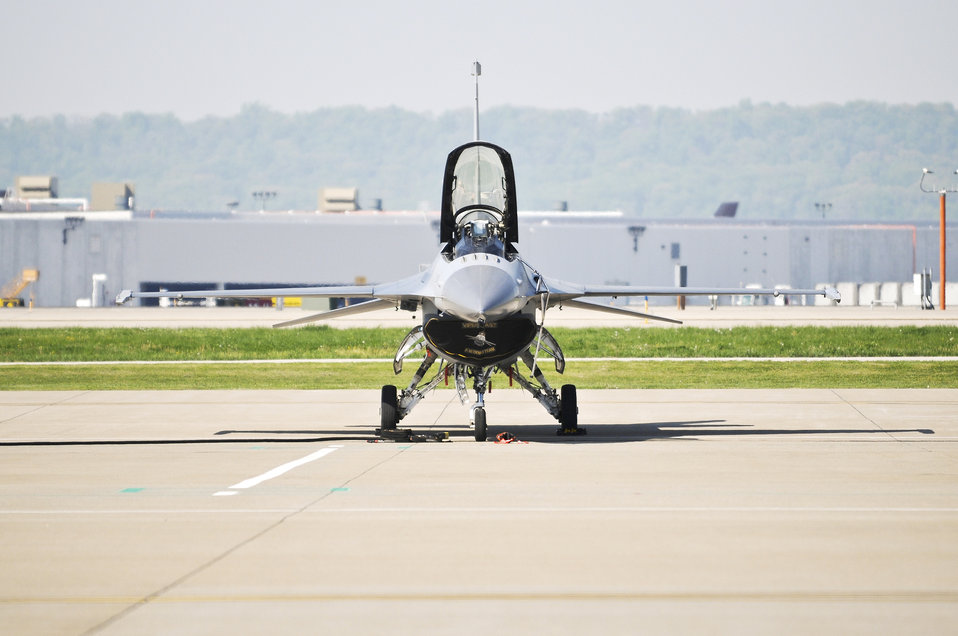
Strike Eagle, Fighting Falcon 'thunder' over Kentucky

An F-16 Fighting Falcon from the Viper East Demo Team at Shaw Air Force Base, S.C., arrives at the Kentucky Air National Guard Base in Louisville, Ky., April 15, 2010. The demostration team, assigned to the 20th Fighter Wing, will be performing in the Thunder Over Louisville air show.